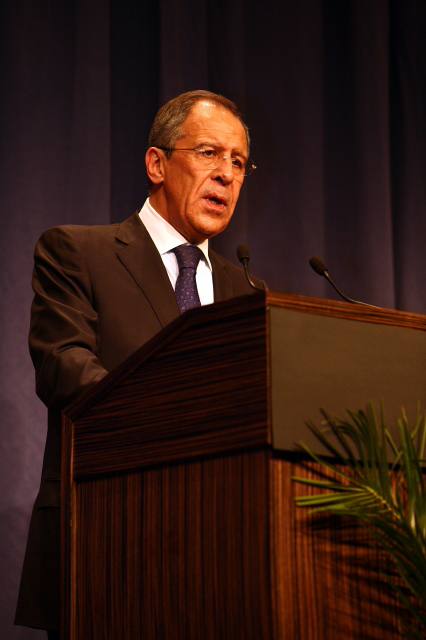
Press Conference With Russian Foreign Minister

Press conference after dinner meeting between U.S. Secretary of State Hillary Rodham Clinton and Russian Foreign Minister Sergey Lavrov in Geneva, Switzerland March 6, 2009.